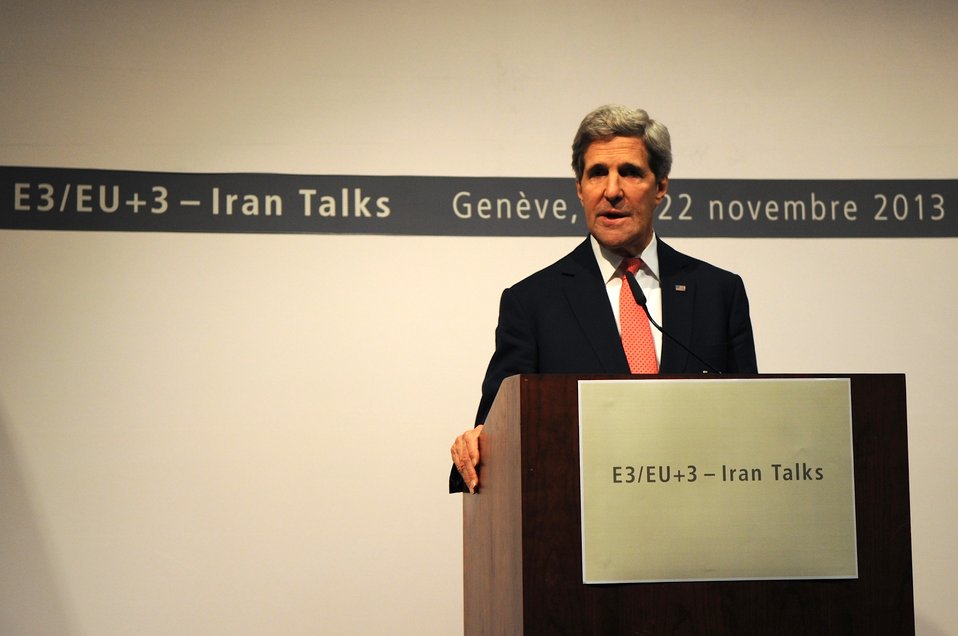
Secretary Kerry Speaks to the Media in Geneva, Switzerland

U.S. Secretary of State John Kerry addresses reporters and takes some of their questions during a news conference in Geneva, Switzerland, on November 24, 2013, after the P5 1 member nations concluded negotiations with Iran about its nuclear capabilities.